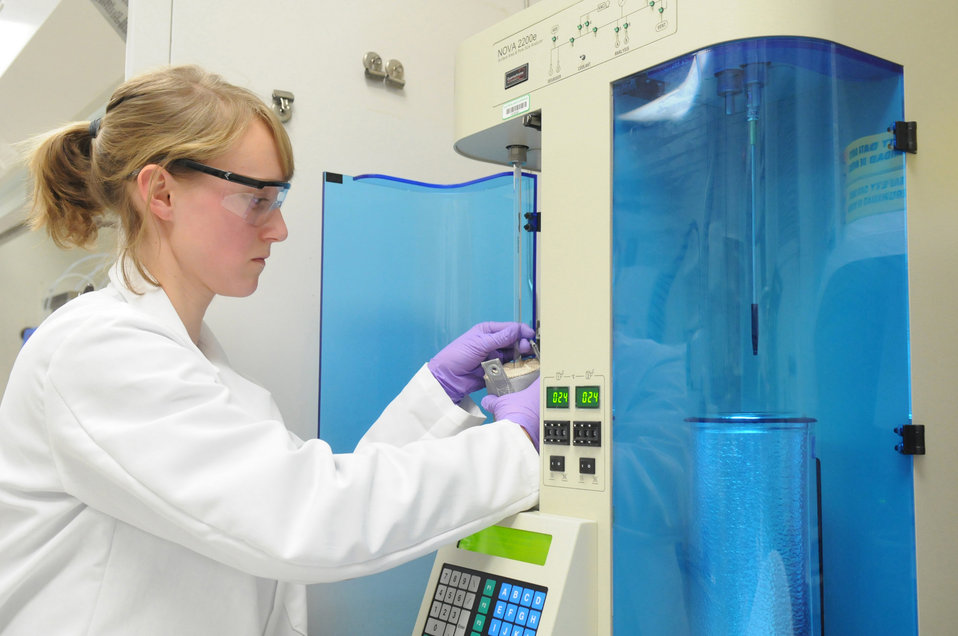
Argonne researcher prepares a surface area analyzer for the characterization of battery materials.

The Advanced Battery Materials Synthesis and Manufacturing R&D Program is focused on scalable process R&D to produce advanced battery materials in sufficient quantity for industrial testing. This work is intended to support domestic battery manufacturing and to enable the transition of new materials and technology to the market.